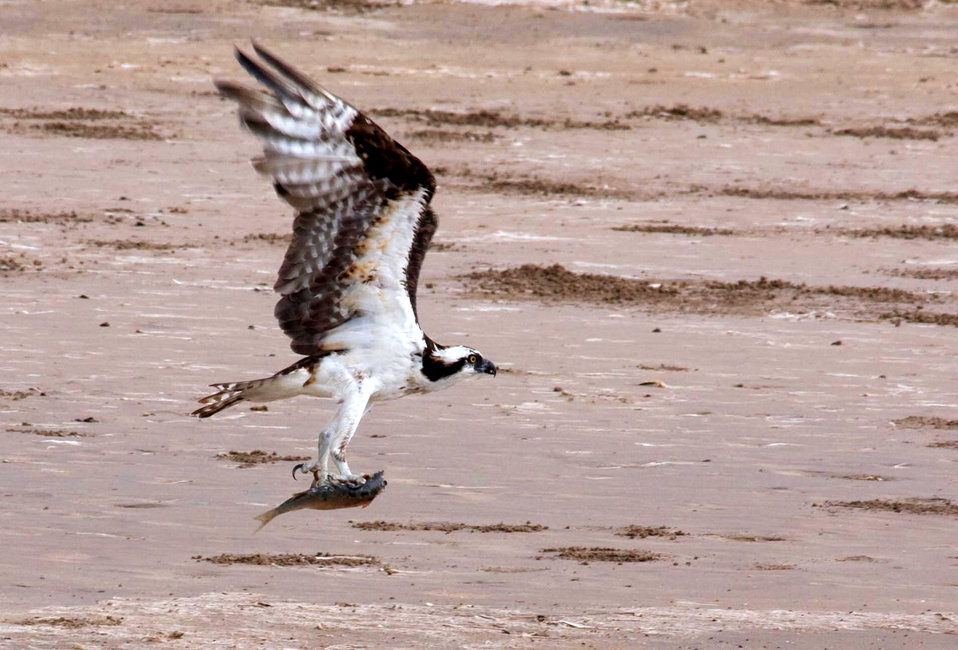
Osprey, Lower Rio Grande Valley National Wildlife Refuge

Osprey with lunch at Boca Chica Beach, LRGV NWR.